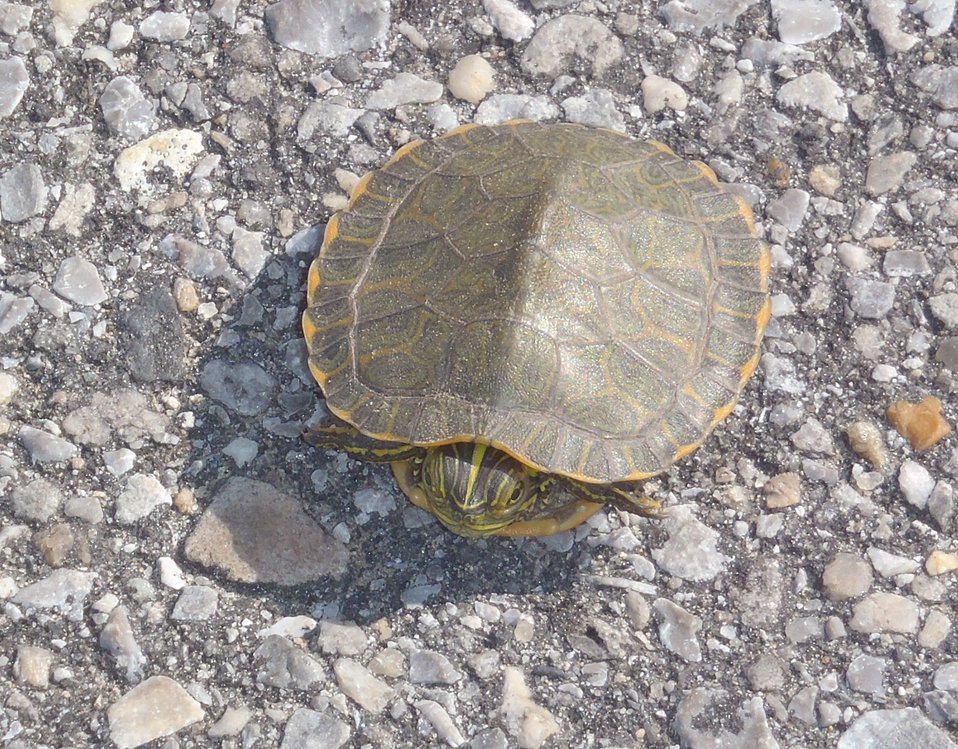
Turtle on the beach, Mobile, Alabama Credit: Mark Ford, NPS